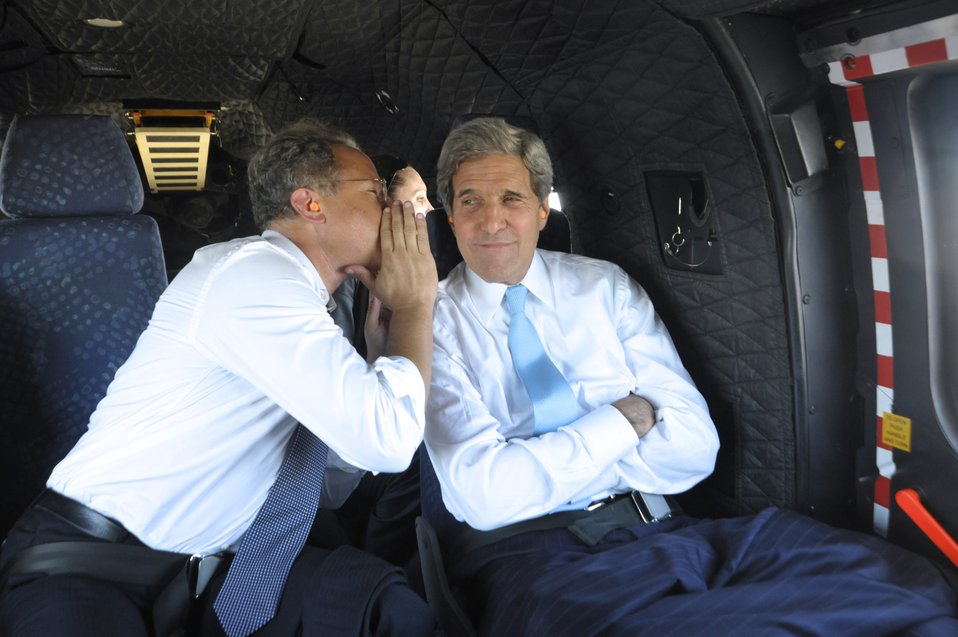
Secretary Kerry Chats With Advisor Lowenstein

U.S. Secretary of State John Kerry chats with Deputy Special Envoy for Middle East Peace Frank Lowenstein as the two prepared to fly from Amman, Jordan, to Jerusalem on June 28, 2013.